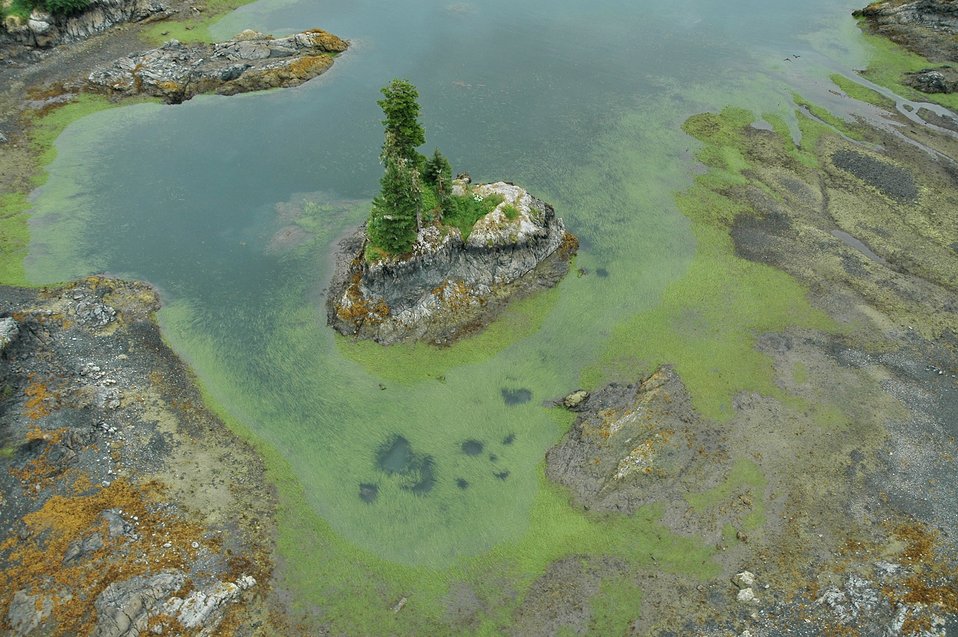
Aerial photograph. A small islet off Chenega Island showing eel grass at the low limit of the intertidal zone.